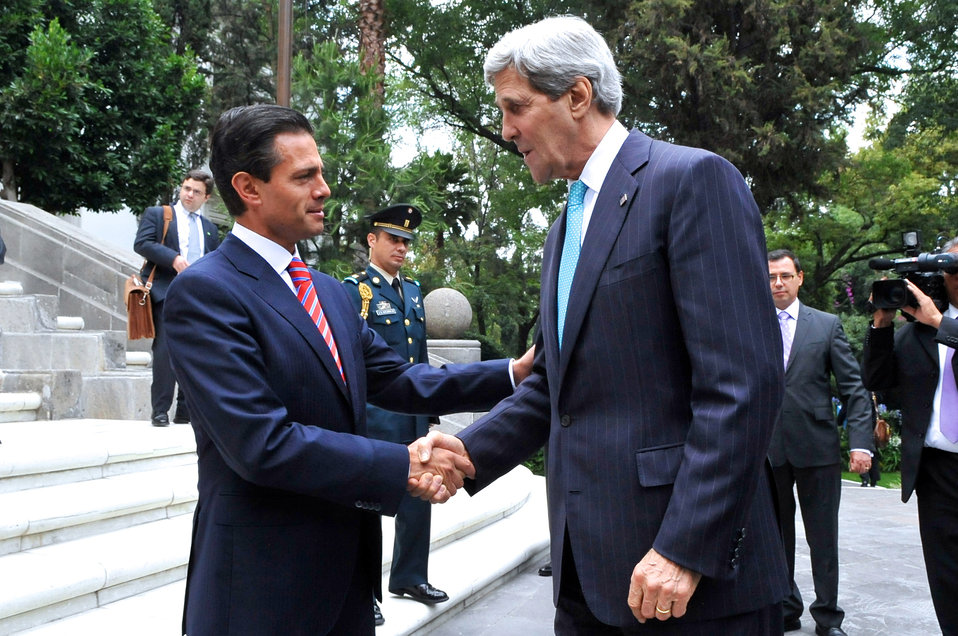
Mexican President Peña Nieto Bids Farewell to Secretary Kerry

Mexican President Enrique Peña Nieto bids farewell to U.S. Secretary of State John Kerry after a bilateral meeting at Los Pinos, the presidential residence and office compound, in Mexico City, Mexico on May 21, 2014.